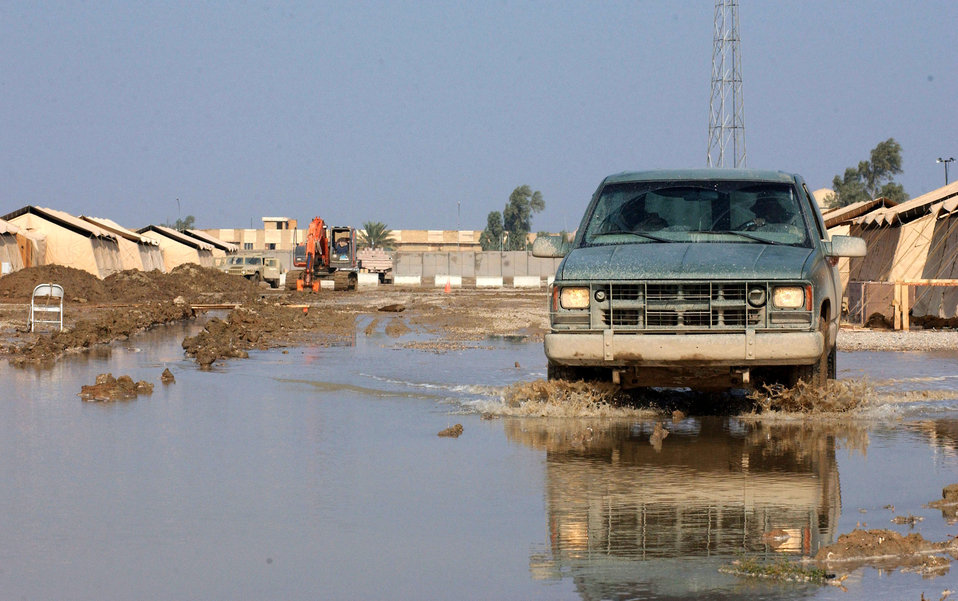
Rainy days

TALLIL AIR BASE, Iraq -- A truck cautiously drives through tent city after the base experienced heavy rains on Dec. 3. The 332nd Expeditionary Civil Engineer Squadron later relieved excess water from the base.